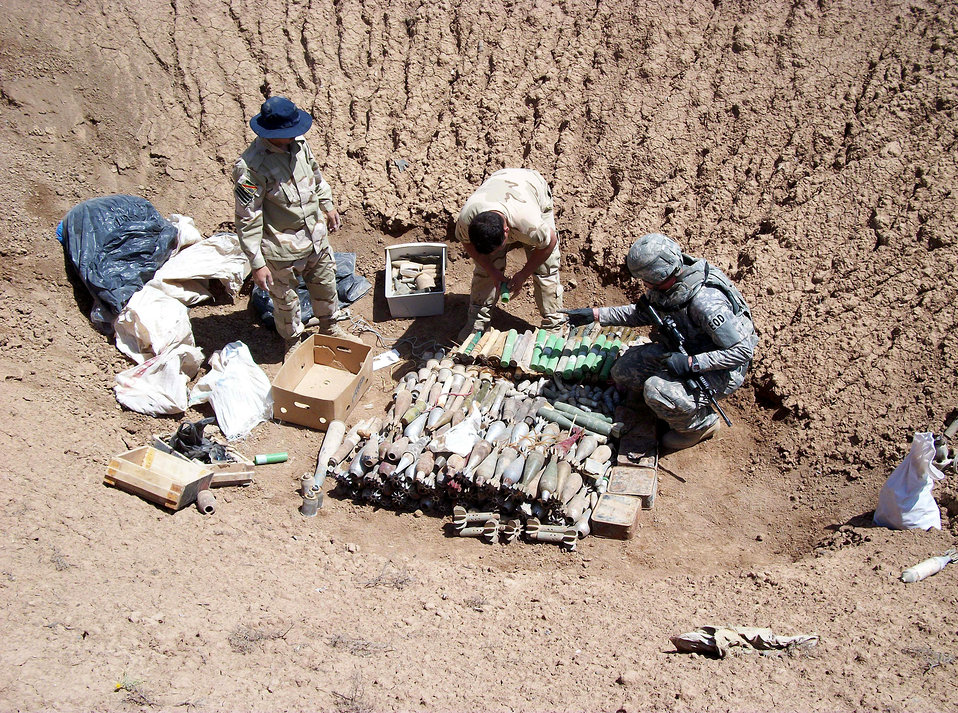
Iraqi air force EOD training

Iraqi airmen pass down munitions and unexploded ordnances for a detonation April 28, 2011, Contingency Operating Site Warrior in Iraq.